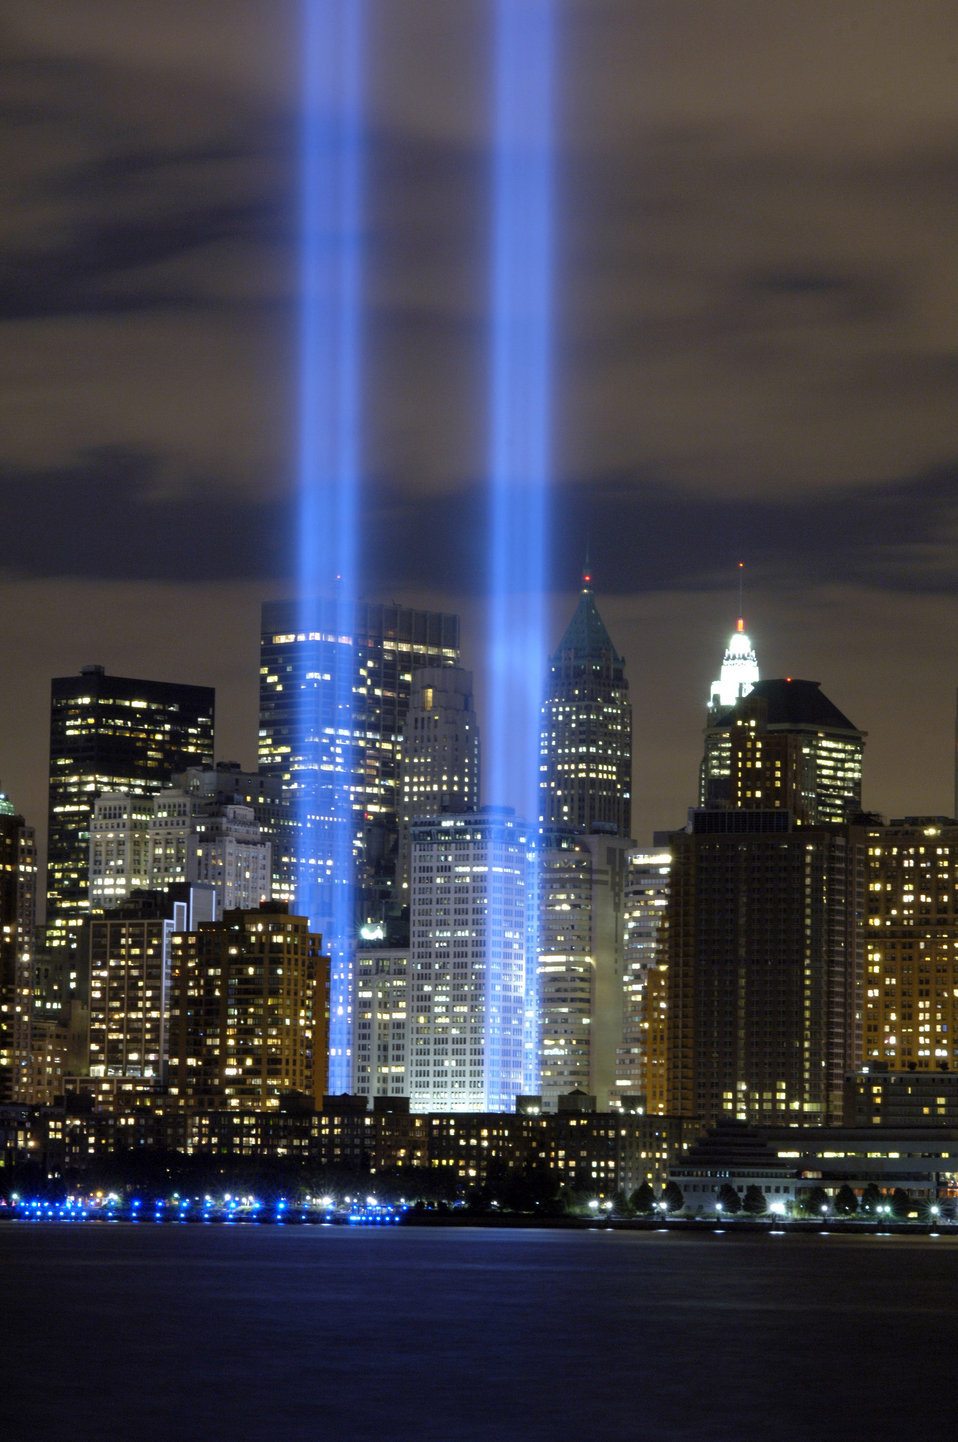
Tribute in Light

The